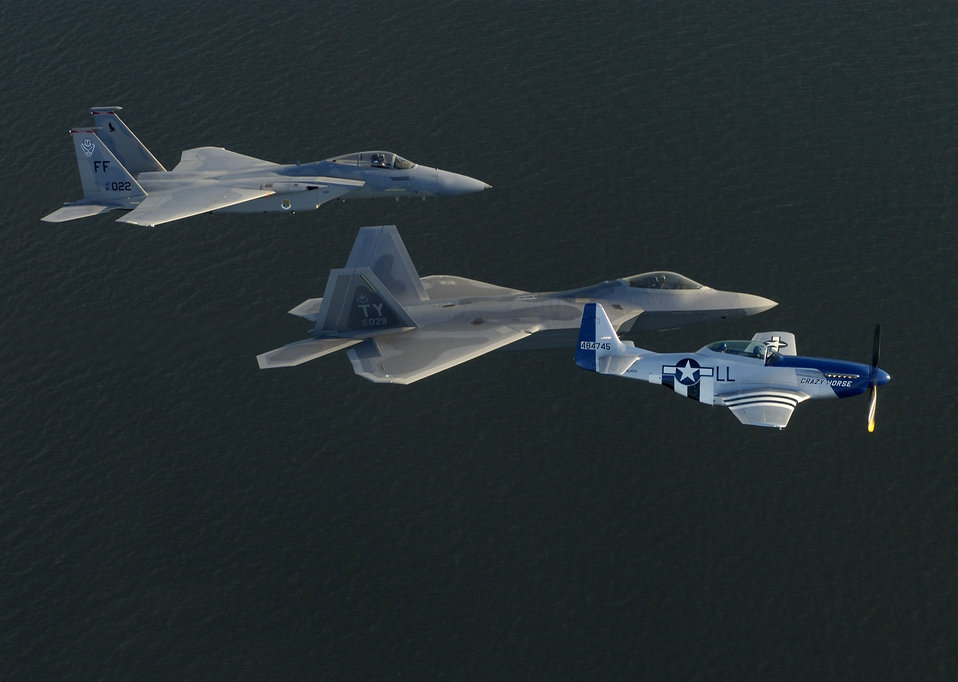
The heights of heritage

OVER ATLANTIC OCEAN (AFPN) - An F-15 Eagle, F/A-22 Raptor and P-51 Mustang train for heritage flight formation flying April 27 off the coast of Langley Air Force Base, Va. Maj. Michael Shower, piloting the F/A-22, is getting his checkout ride for the formation with P-51 Pilot Maj. Gen. Mike Decuir, the Air Combat Command operations director, and Capt. Jason Costello, a 1st Fighter Wing demonstration team pilot.